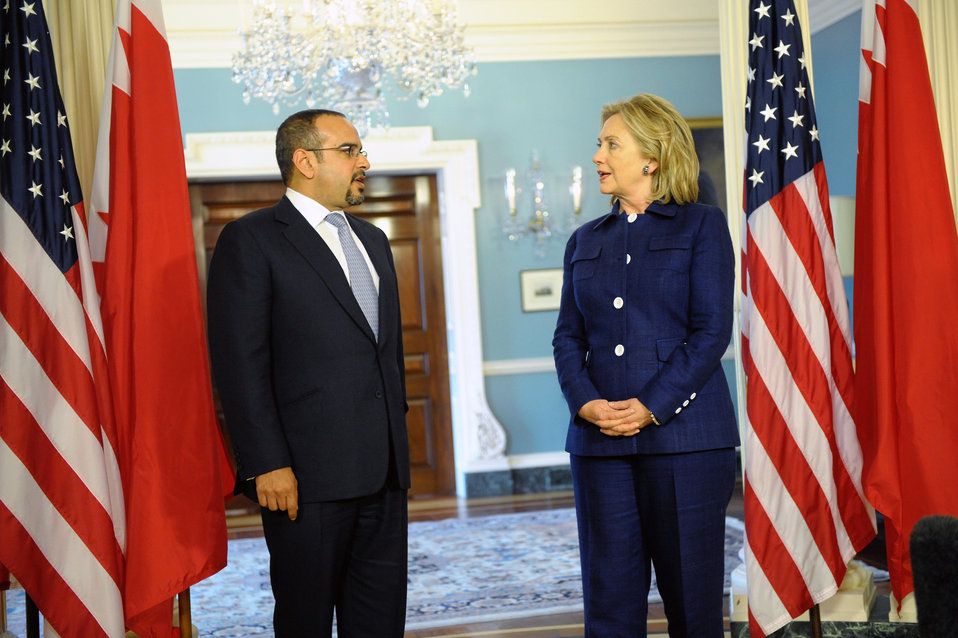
Secretary Clinton Meets With Bahraini Crown Prince Salman bin Hamad Al-Khalifa

U.S. Secretary of State Hillary Rodham Clinton meets with Bahraini Crown Prince Salman bin Hamad Al-Khalifa, at the U.S. Department of State in Washington, D.C., on June 7, 2011.